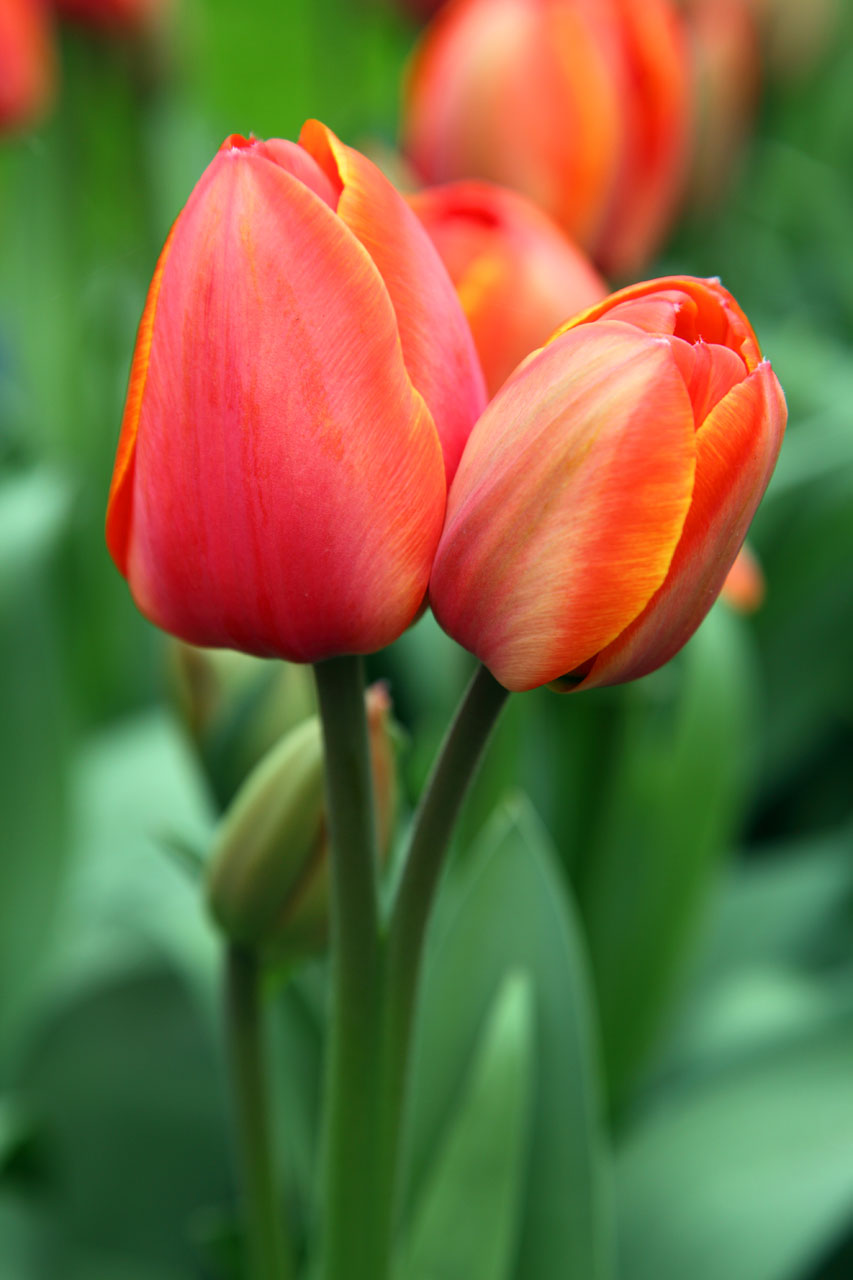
Red tulips

Detail photo of red tulips.